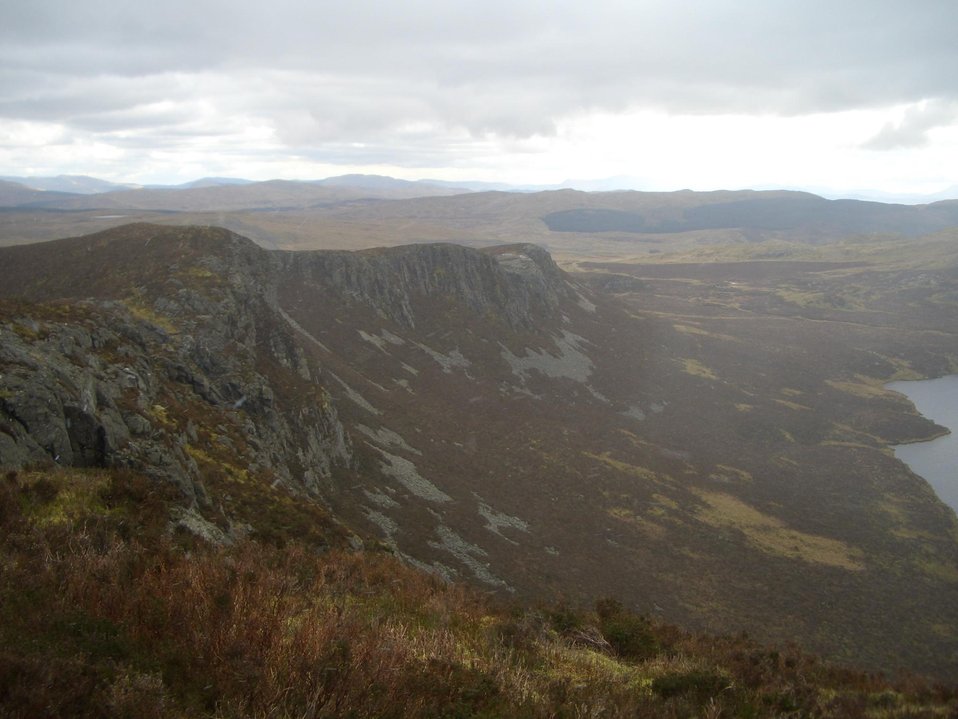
Y Gamallt is a mountain located in the Migneint in Snowdonia, North Wales. - Looking south from the summit. Foel Boeth (left) and Graig Wen (right)